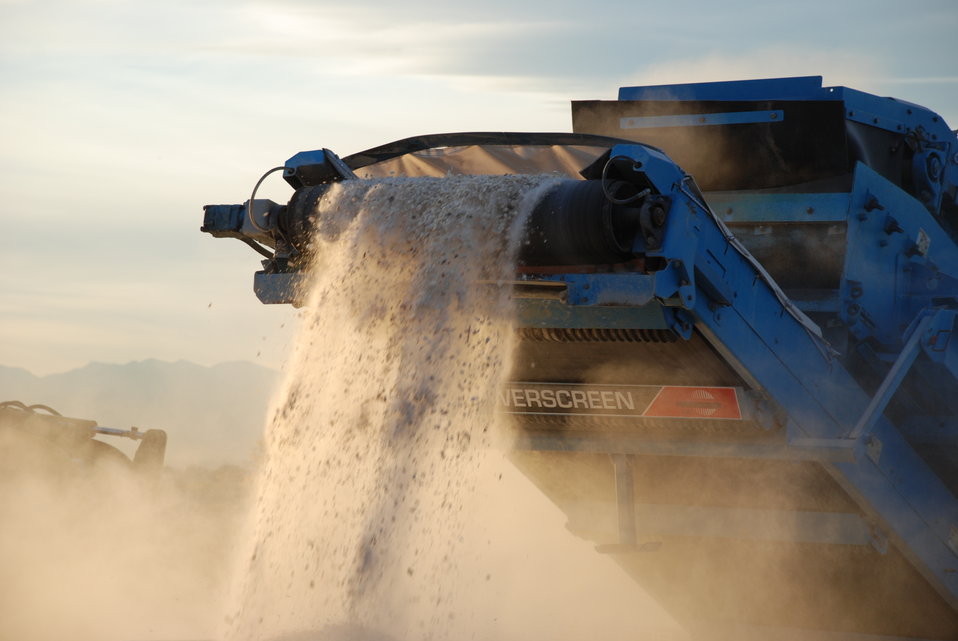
Ivory Crush 2013